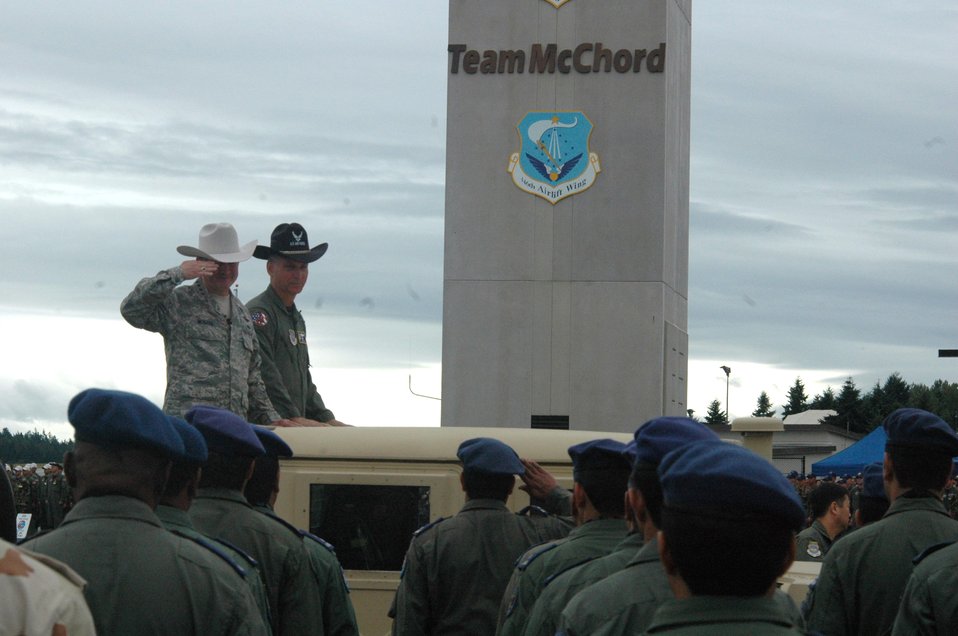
Opening ceremonies mark official start for Air Mobility Rodeo 2007

Gen. Duncan McNabb, Air Mobility Command commander, salutes the leader of one of the international teams during the commander review of teams at opening ceremonies for Air Mobility Rodeo July 22 at McChord Air Force Base, Wash. Rodeo, sponsored by Air Mobility Command, is a readiness competition for U.S. and international mobility air forces. With General McNabb is Brig. Gen. Kip Self, Rodeo 2007 commander.